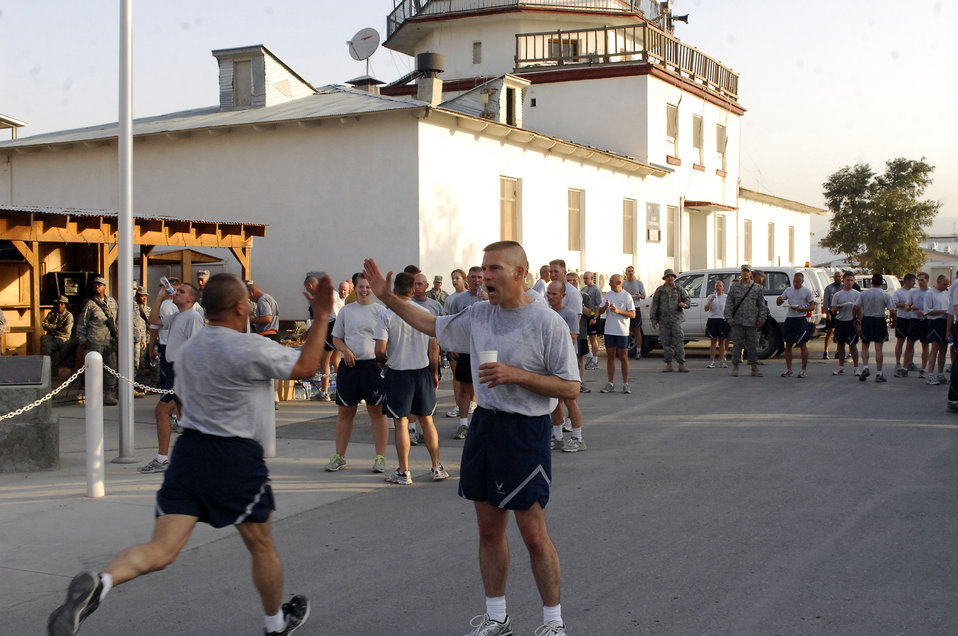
Warfighters take time for Air Force's 62nd birthday

Brig. Gen. Steven L. Kwast encourages an Airman to finish strong as he completes a 5 kilometer run on the 62nd Air Force birthday Sept. 18, 2009, at Bagram Airfield, Afghanistan. Airmen here were challenged by the general to run for a month leading up to the Air Force birthday and then run the 5 kilometer run with him after a reveille ceremony to complete the challenge. General Kwast is the 455th Air Expeditionary Wing commander.